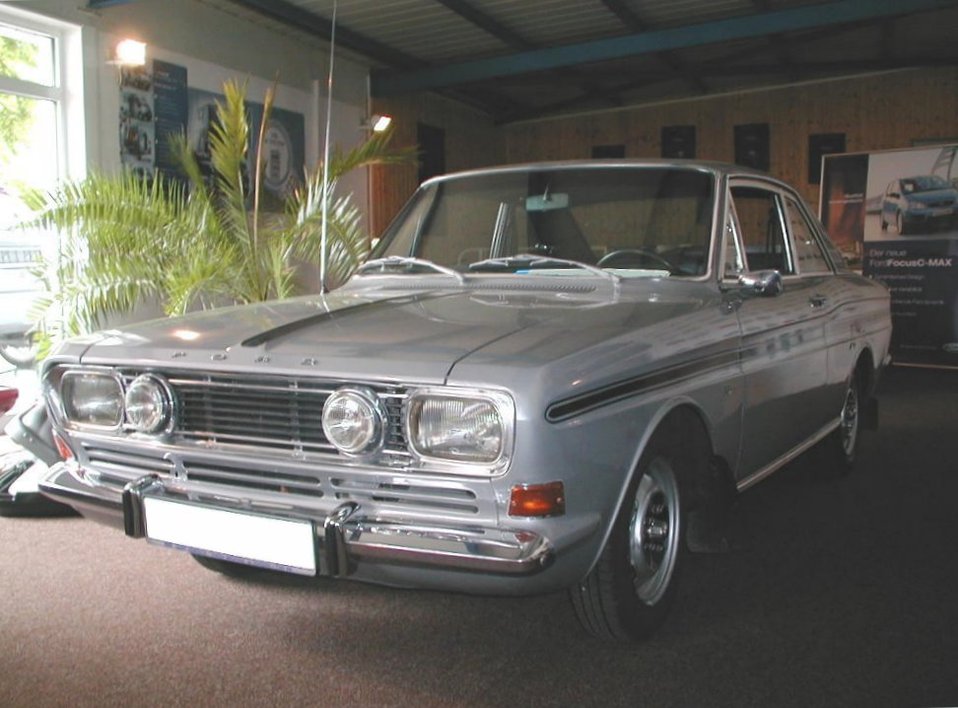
Ford 15m (P6) RS Coupé, 10/1969